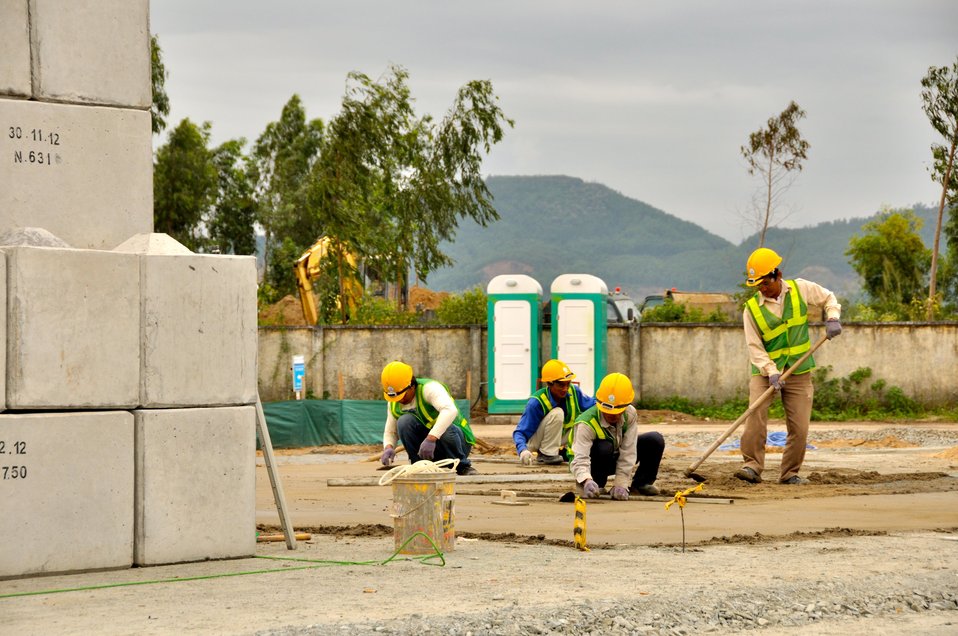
Site Preparation for Environmental Remediation of Dioxin Contamination at Danang Airport

Danang Airport, January 22, 2013